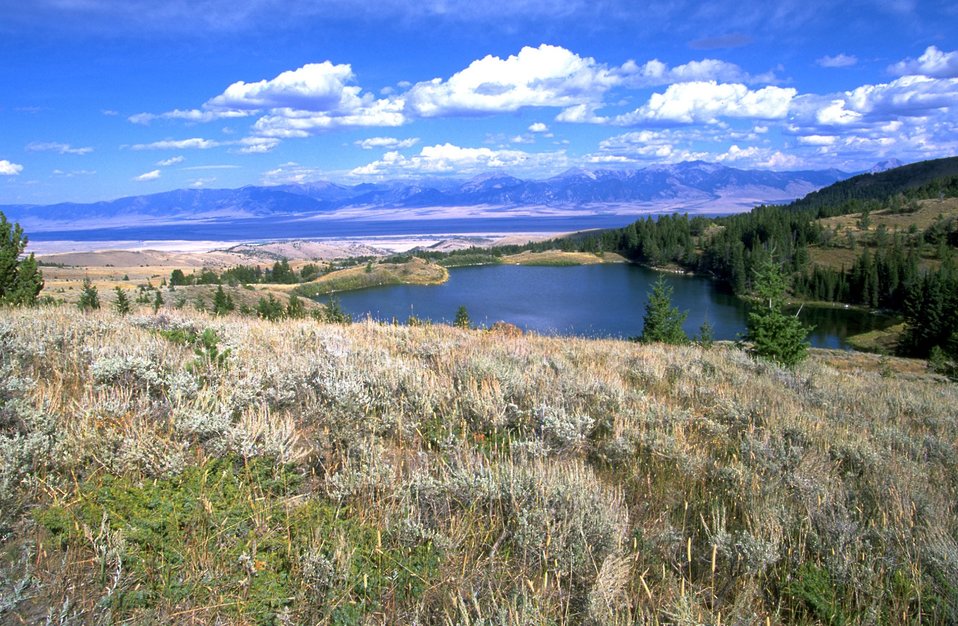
Twin Lakes